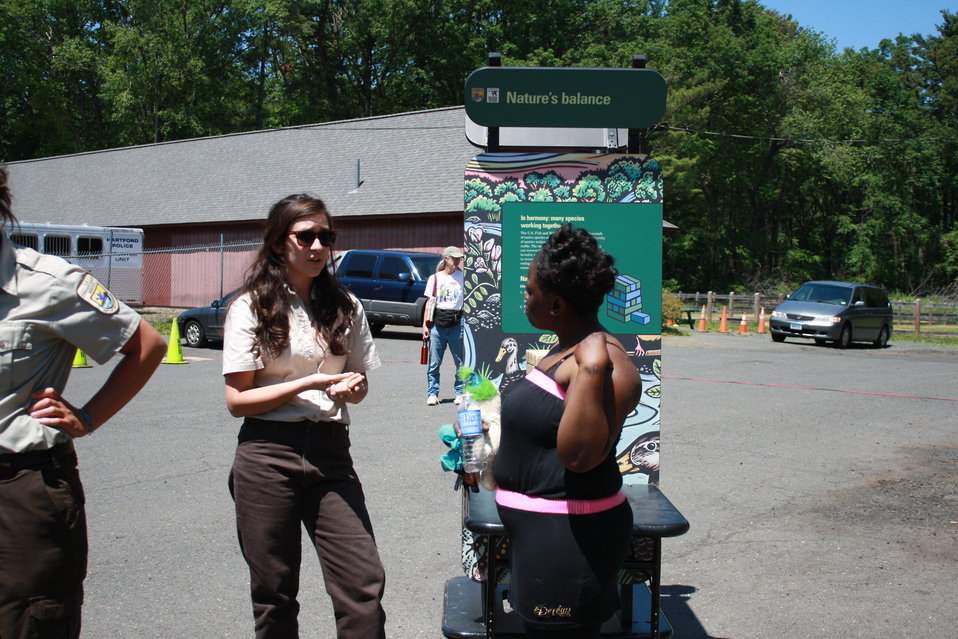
Talking about the WOW Express

WOW Express at Keney Park in Hartford, Conn.